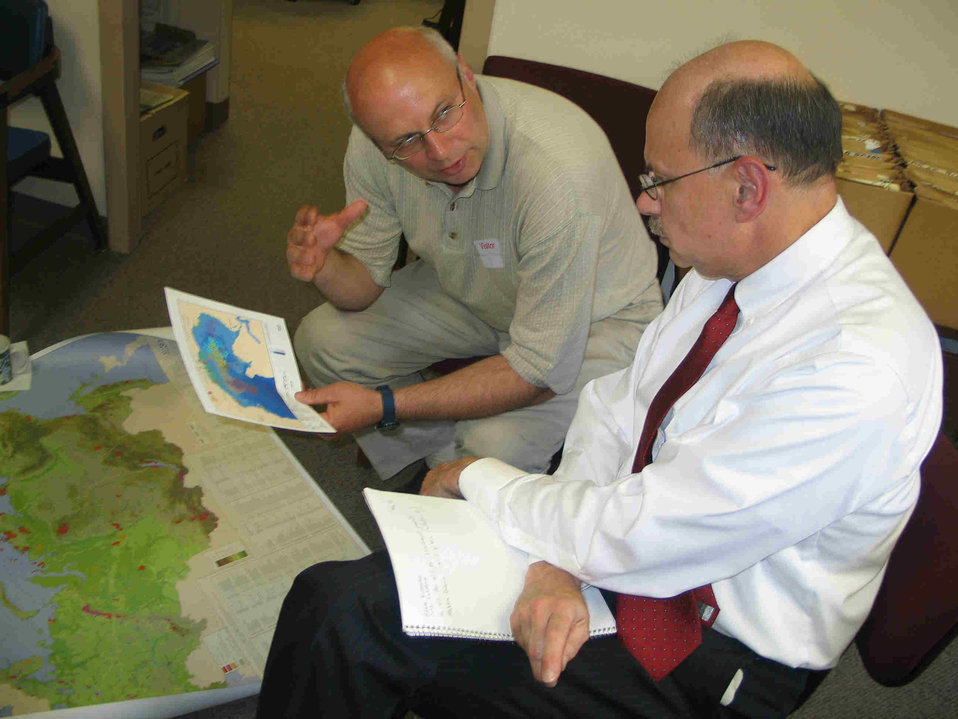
Knizhnikov and Kohl

U.S. Department of Interior officials meet with Alexei Knizhnikov, Oil & Gas Environmental Policy Officer for WWF-Russia.